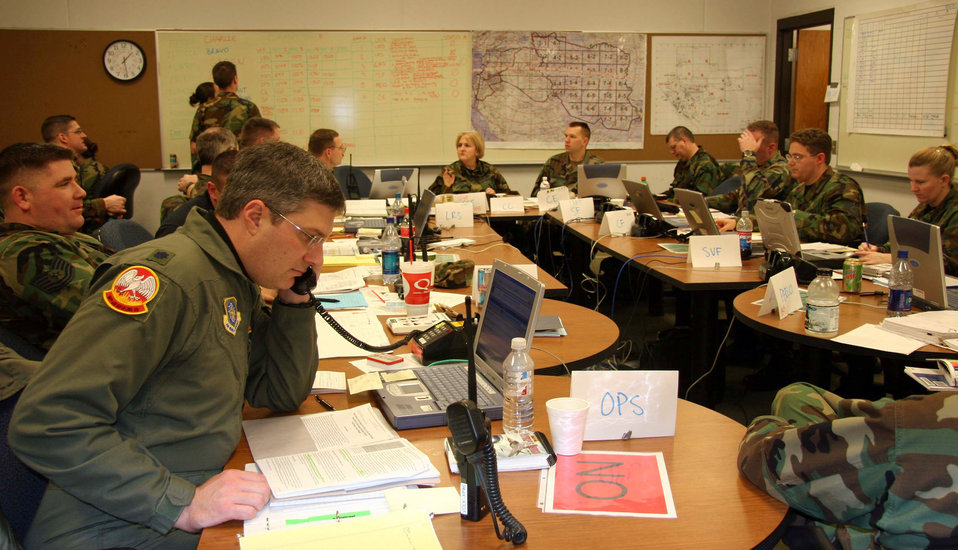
939th Survival and Recovery Center

VOLK FIELD AIR NATIONAL GUARD BASE, Wis. (AFPN) -- While the steady hum of voice and ringing telephones fills the air, members of the 939th Air Refueling Wing's survival and recovery center practice gathering and flowing information as part of the Air Force's first readiness safeguard command and control functional training exercise program here. The center has representatives from wing support, maintenance, civil engineer and operations sections.